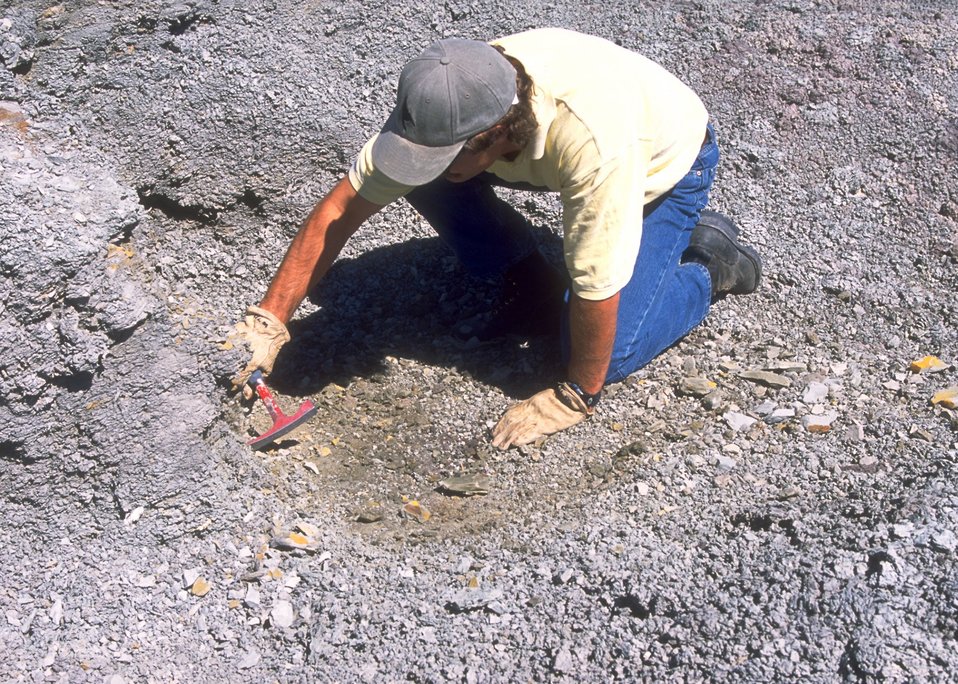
Dave Baker, WFO, examining fossils at the Cedar Ridge Paleo area, Lander Field Office.